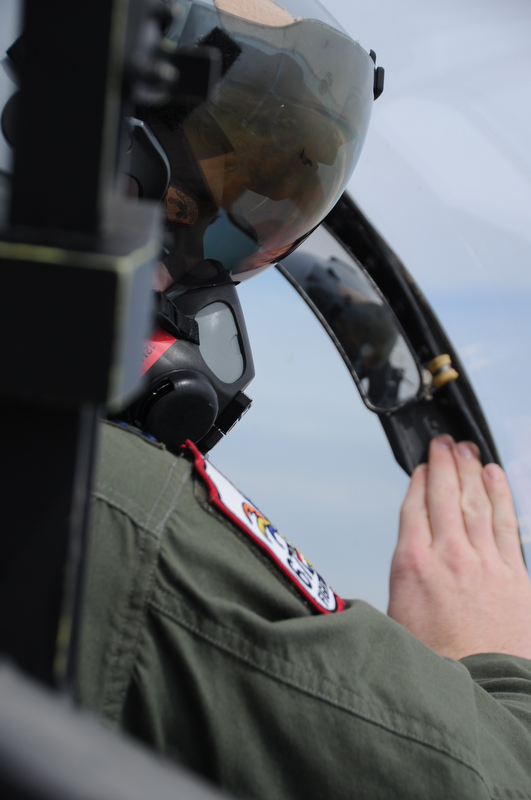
Cope Tiger 2011

Capt. Richard Ward, an F-15 pilot assigned to the 44th Expeditionary Fighter Squadron at Kadena Air Base, Japan, looks back for the simulated enemy during an air-to-air exercise over Thailand March 23, 2011, while participating in Cope Tiger 2011, which runs from March 14 through 25. Participants of Cope Tiger include the U.S. Air Force, the U.S. Marine Corps, the Royal Thai Air Force, Royal Thai Army and the Republic of Singapore Air Force.